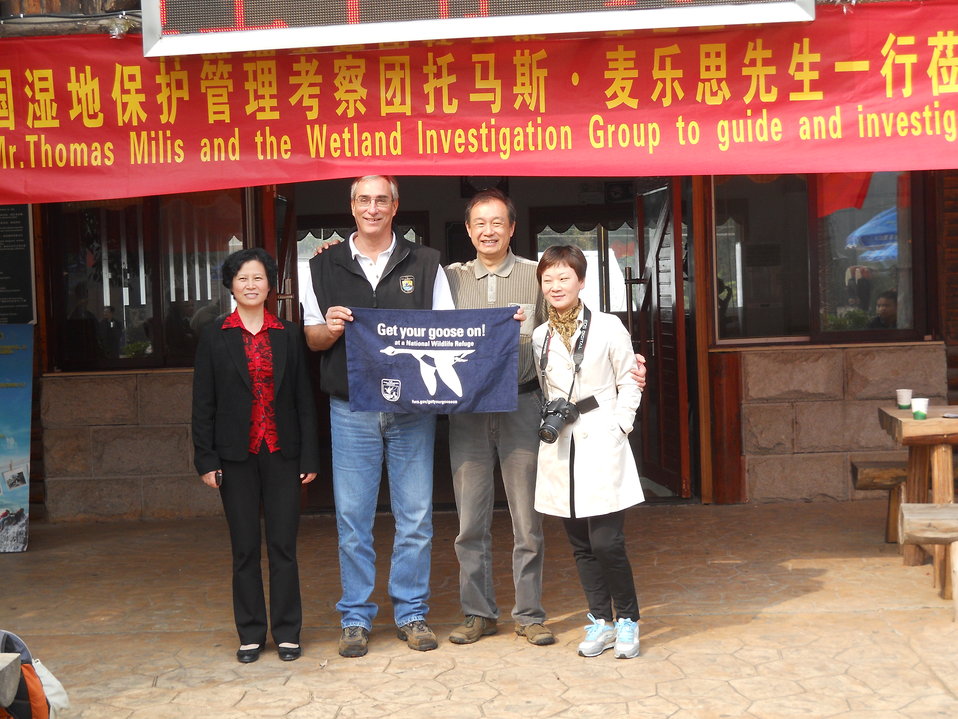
Get Your Goose On! - in China!

This photo was taken on November 3, 2012 in Anhui Province China. Here, Tom Melius, Director of the U.S. Fish and Wildlife Service's Midwest Region, poses with his Chinese colleagues with a GYGO! towel.